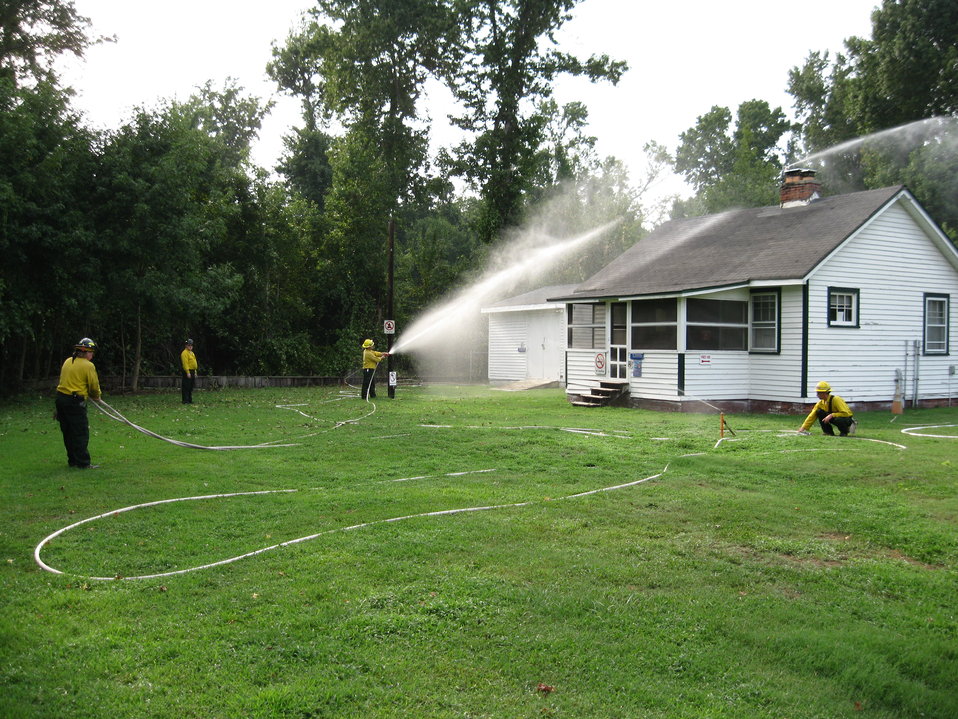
Historical building protection

Suffolk, VA, August 2011: Firefighters test a sprinkler system they installed around a historical building at the Lake Drummond Reservation Army Corps of Engineers campground along Feeder Ditch. The building was potentially threatened by the Lateral West Fire burning on Great Dismal Swamp National Wildlife Refuge.